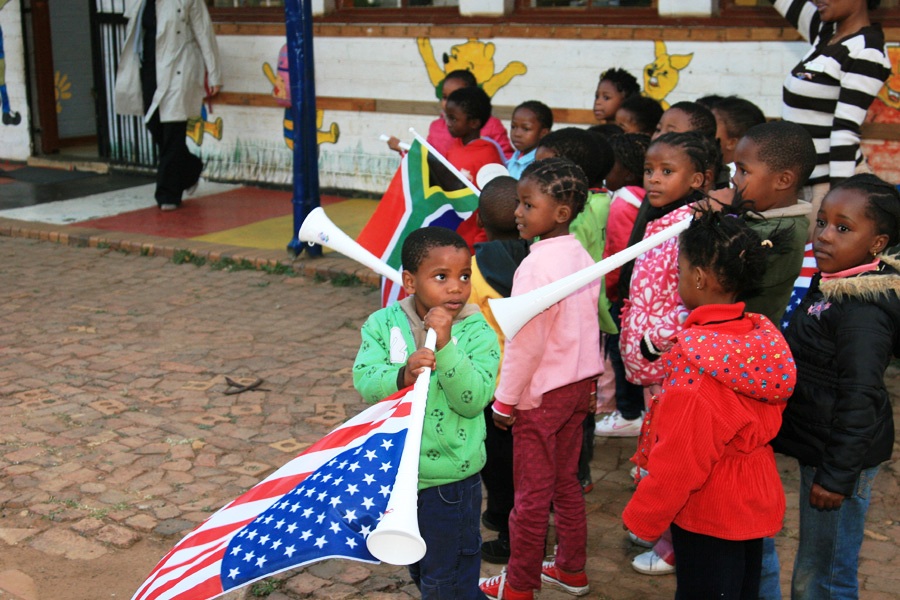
South African Children Play Their Vuvuzelas

South African children at the Mapetla Day Care Centre in Soweto, Johannesburg, South Africa, play their vuvezelas for Dr. Jill Biden, wife of Vice President Joseph Biden, on June 10, 2010.